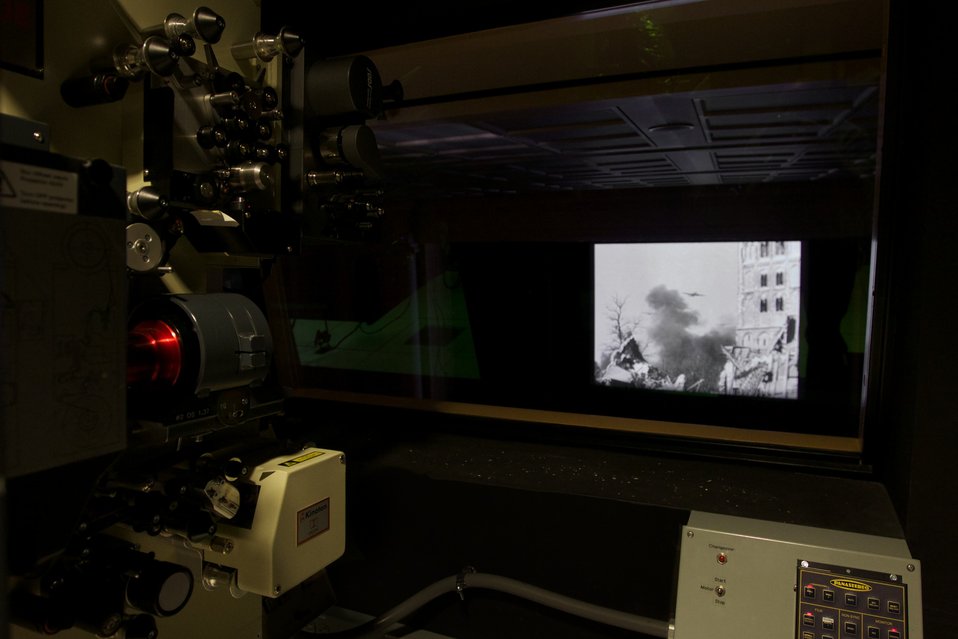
View from the control booth during preview of World War 2 film restored by the Motion Picture Lab; Location: Archives 1 - McGowan Theater Booth, Washington , D.C.